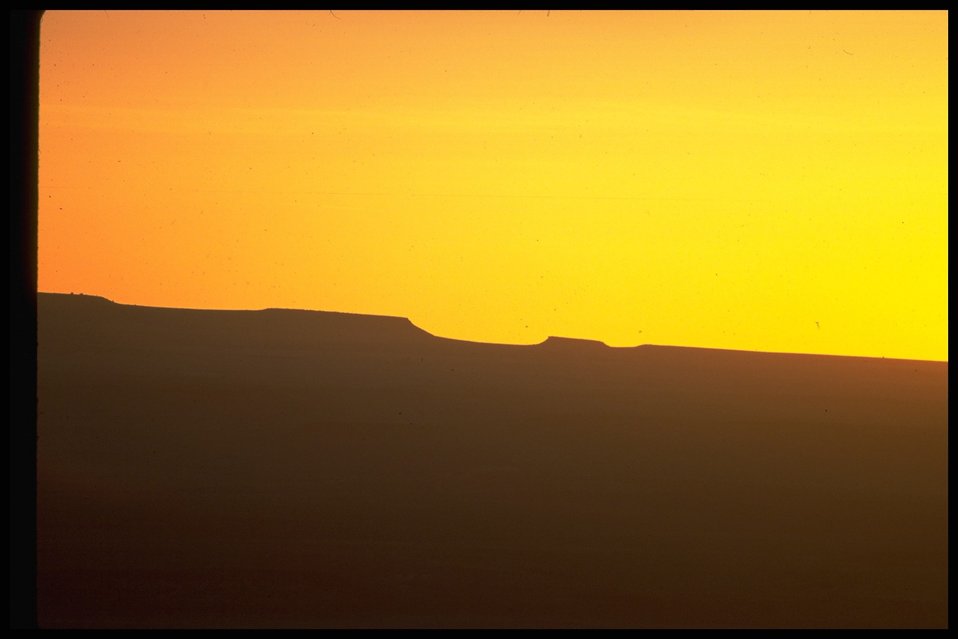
Sunrise at Lakeview District.